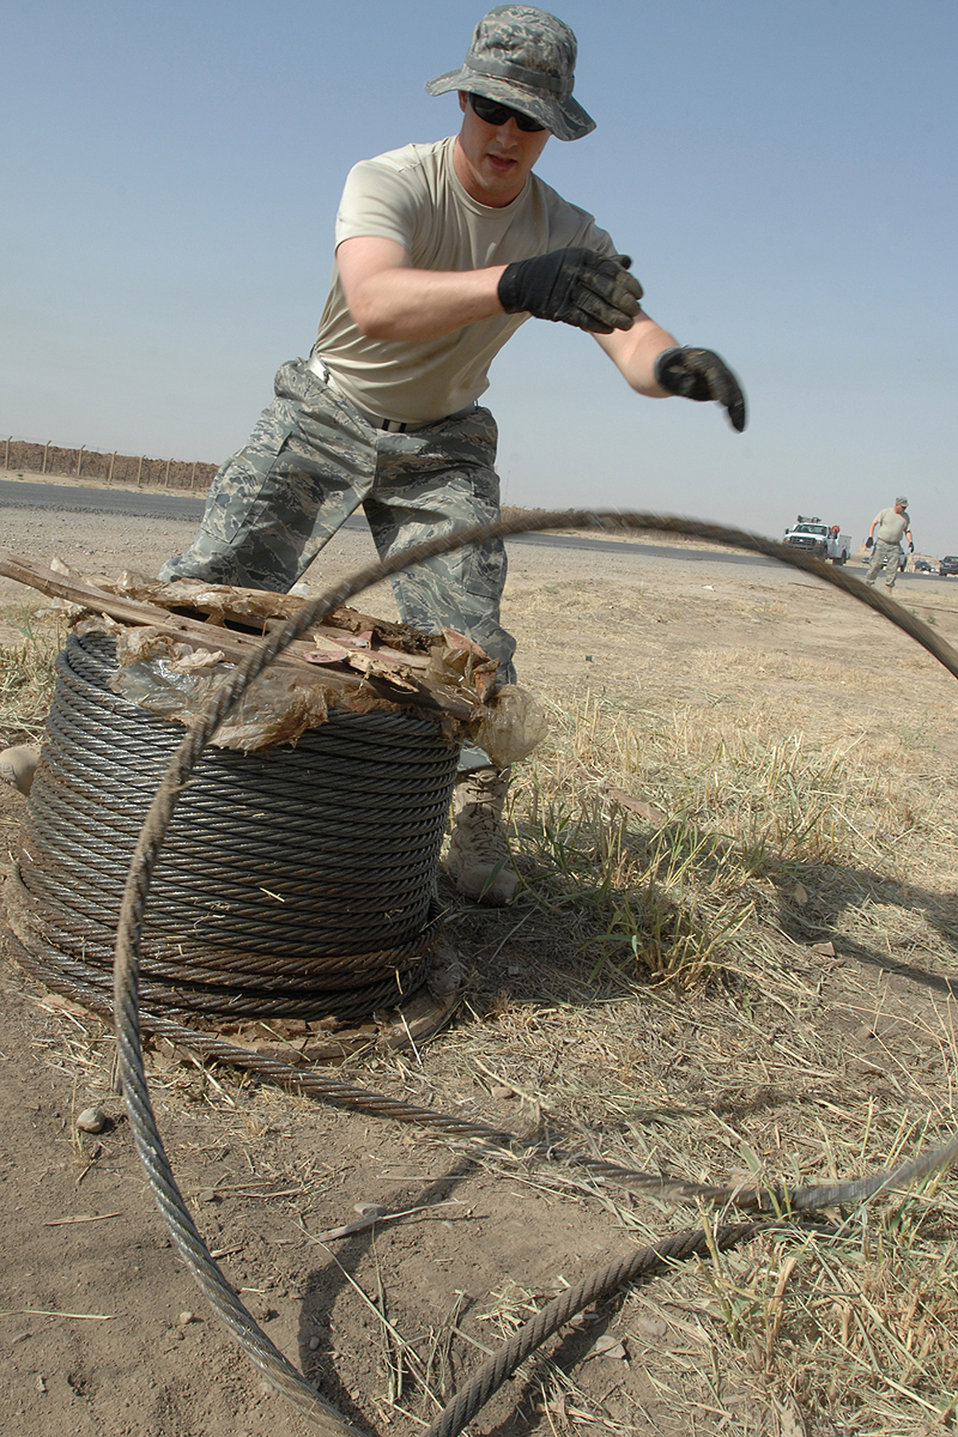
Kirkuk self-help project protects airfield assets, saves money

Staff Sgt. Seth Clark uncoils aircraft cable June 5 at Kirkuk Air Base, Iraq. Airmen here teamed up to place barriers, cables and signs around the airfield recently, mitigating vulnerabilities and lessening safety risks. This self-help airfield-security project saved an estimated $500,000 by using existing assets and volunteers. Sergeant Clark is a 506th Air Expeditionary Group Expeditionary Chapel chaplain's assistant. He is a native of Morgantown, W.Va. He is deployed from Goodfellow Air Force Base, Texas.